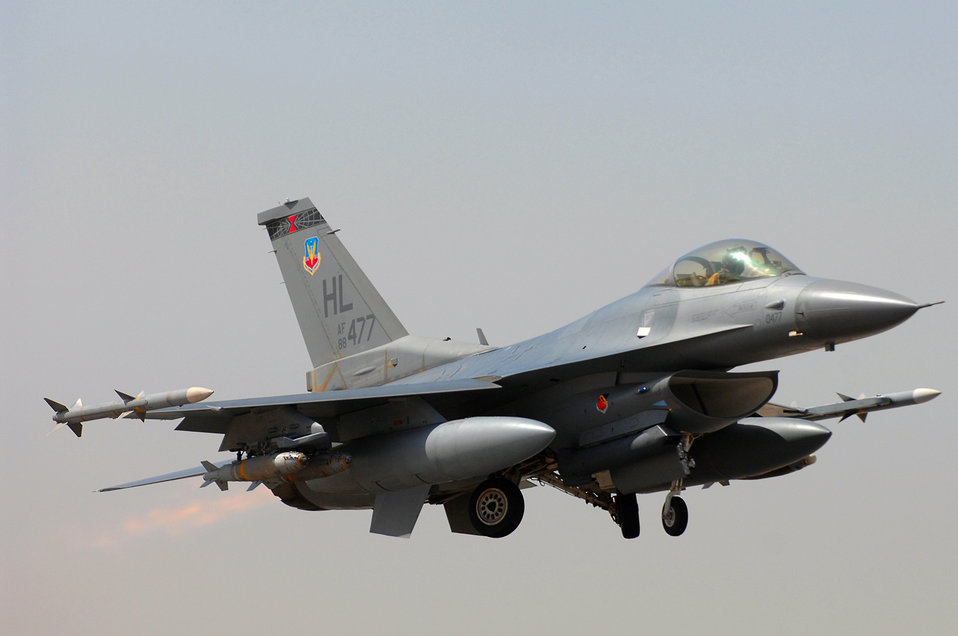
A show of force = 1 million missions

An F-16 Fighting Falcon launches on a mission April 21 at Balad Air Base, Iraq. On April 20, U.S. Air Force pilots had flown more than 1 million sorties in support of the global war on terrorism. The F-16 is from Hill Air Force Base, Utah.